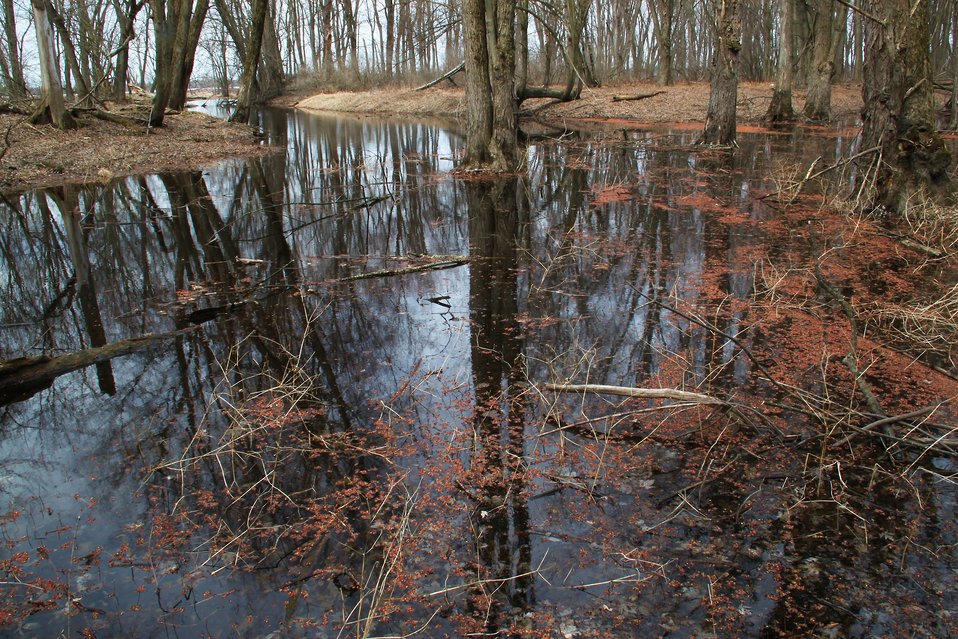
Forested Wetlands

Floodplain forest at Missisquoi National Wildlife Refuge